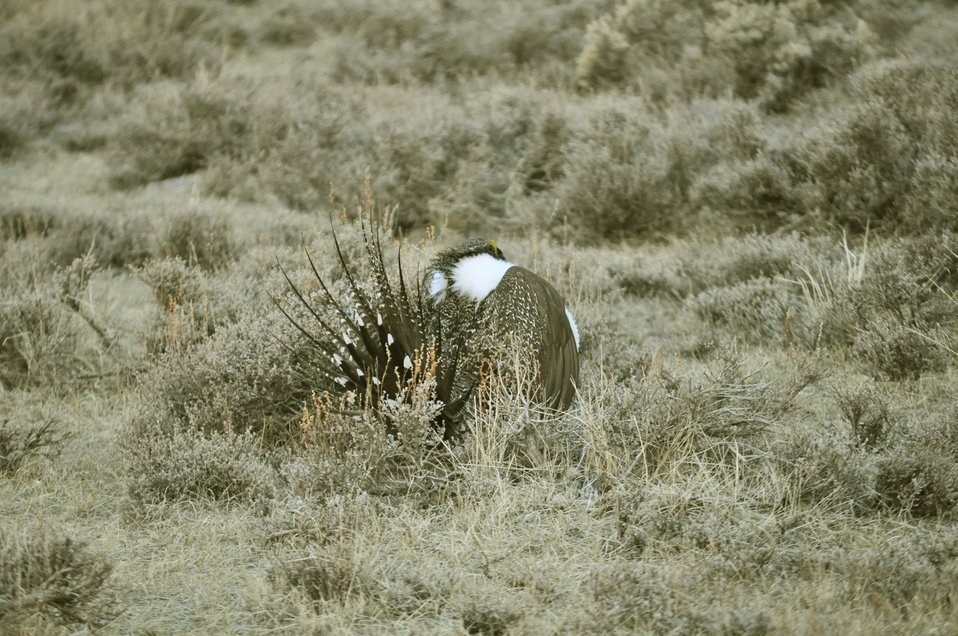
Male greater sage-grouse struts at lek (dancing or mating grounds) to attract females near Bodie, California.